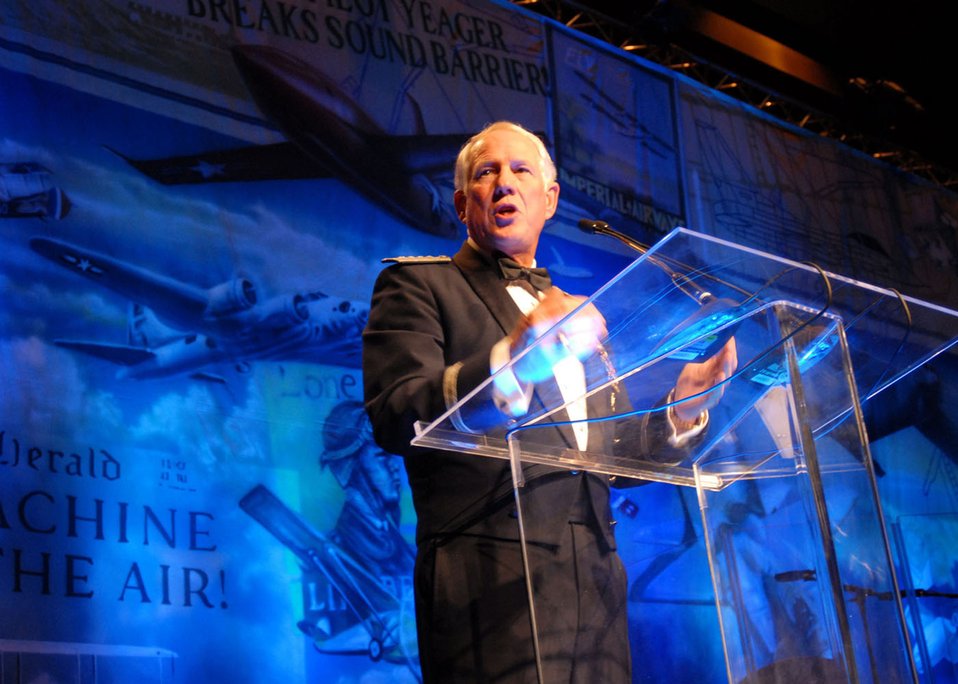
Commander highlights AETC mission, impact, initiatives

Gen. William R. Looney III addresses attendees of the Air Force 60th Anniversary Ball Sept. 7 at the Henry B. Gonzalez Convention Center in San Antonio. General Looney is the commander of Air Education and Training Command. The 2007 AETC Symposium culminated with a celebratory ball. More than 2,000 people attended the symposium and ball.